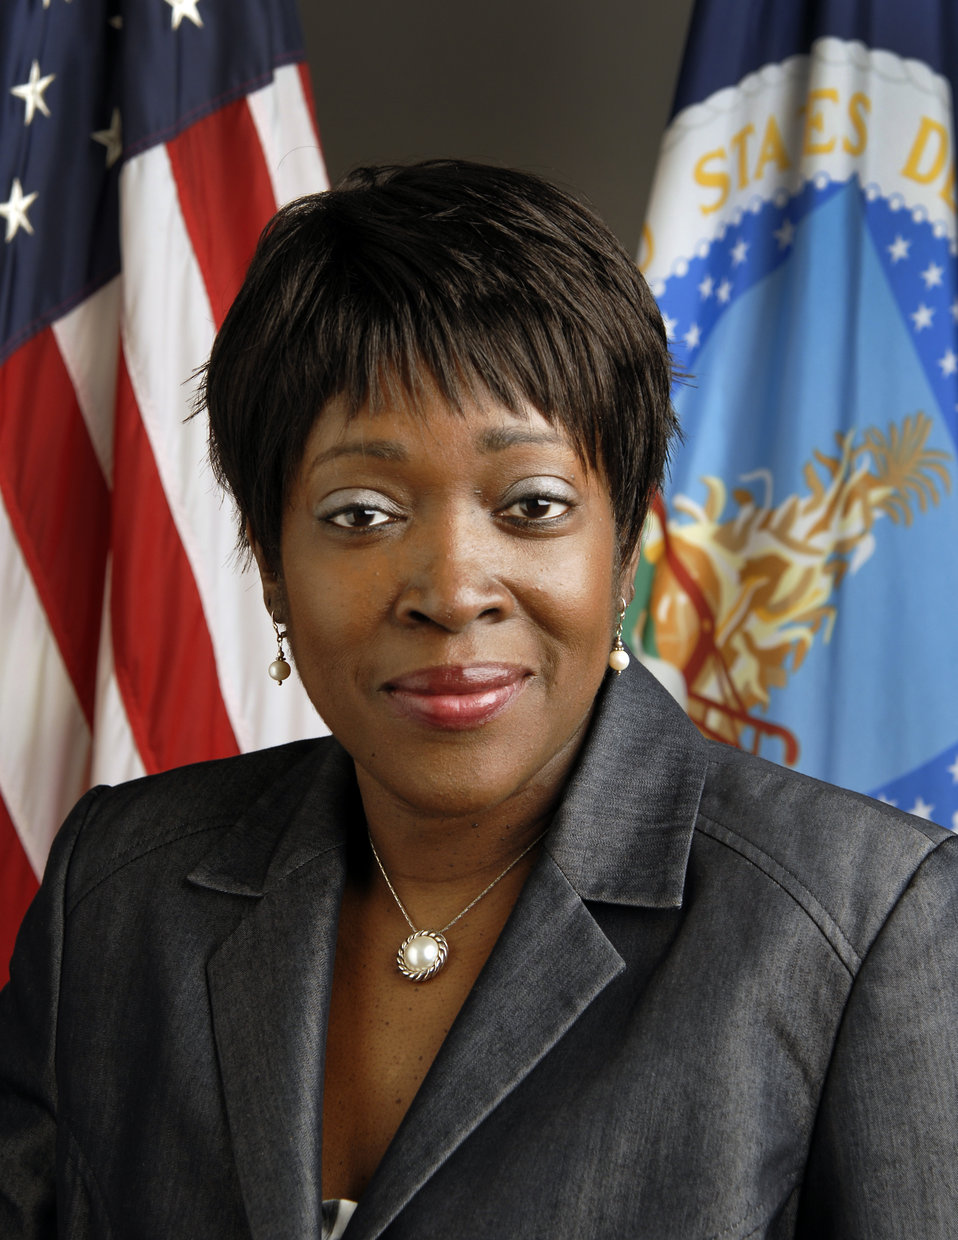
20120222-OA-KJH-0011 Director of Office of Advocacy and Outreach, Departmental Management Carolyn Parker

Portrait of Carolyn Parker, Director of Office of Advocacy and Outreach, Departmental Management.